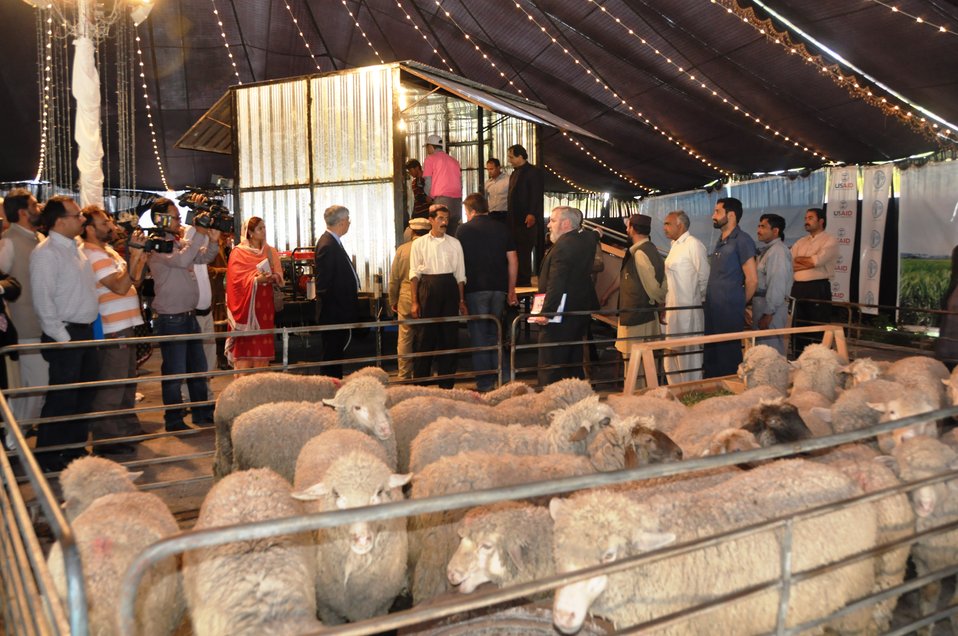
Mobile shearing shed